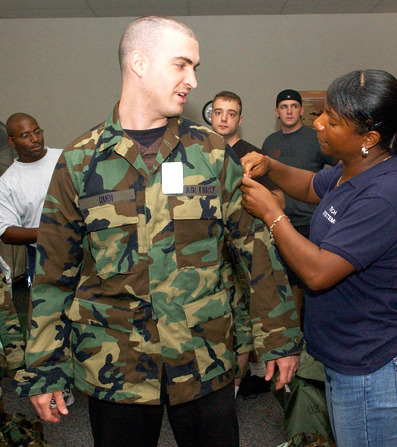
Push-Pull to test real-world Air Force capabilities

Capt. Darren Rubi gets his uniform quality checked by Karen Walker at clothing issue during the Push-Pull 2007 exercise at Lackland Air Force Base, Texas. Push-Pull 2009 is scheduled to take place April 6 to 10 at Lackland AFB and will include 150 regular Air Force retirees. The exercise evaluates the Air Force's mobilization processes and crisis-action procedures.